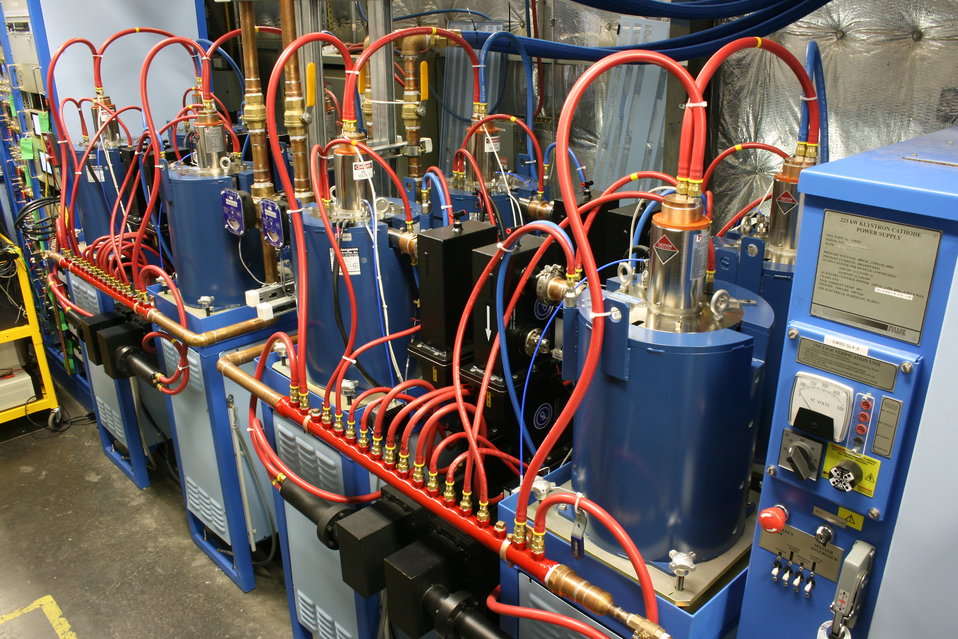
Eight Klystrons power eight cavities in a cryomodule. These Klystrons are installed in a service building that is situated directly above the cryomodules they power in the accelerator tunnel.